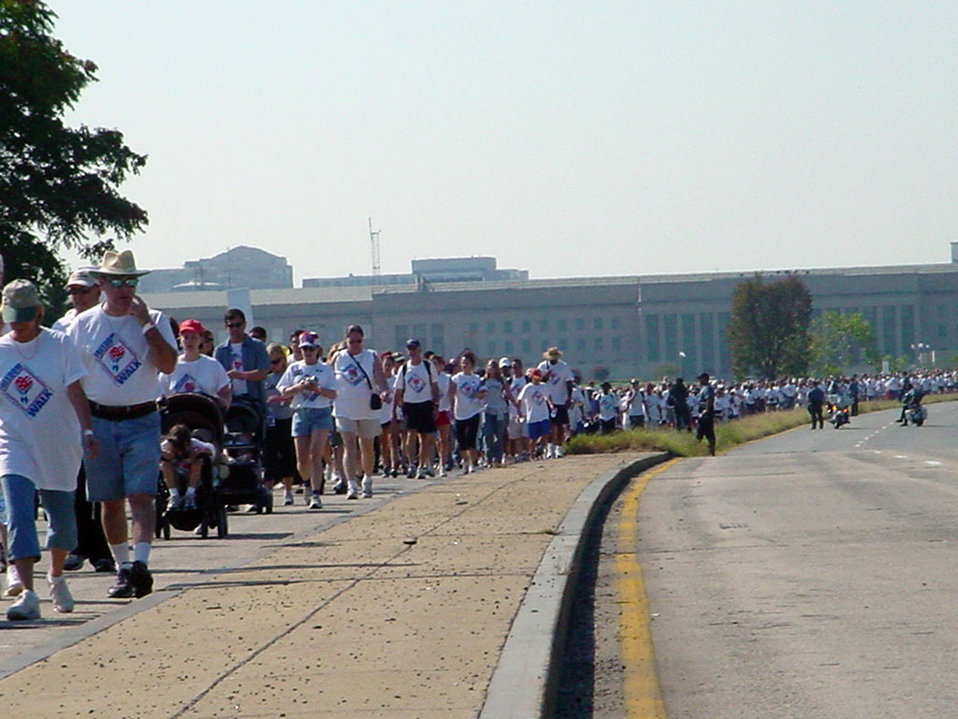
Freedom Walk

WASHINGTON - Thousands of people participated in the first